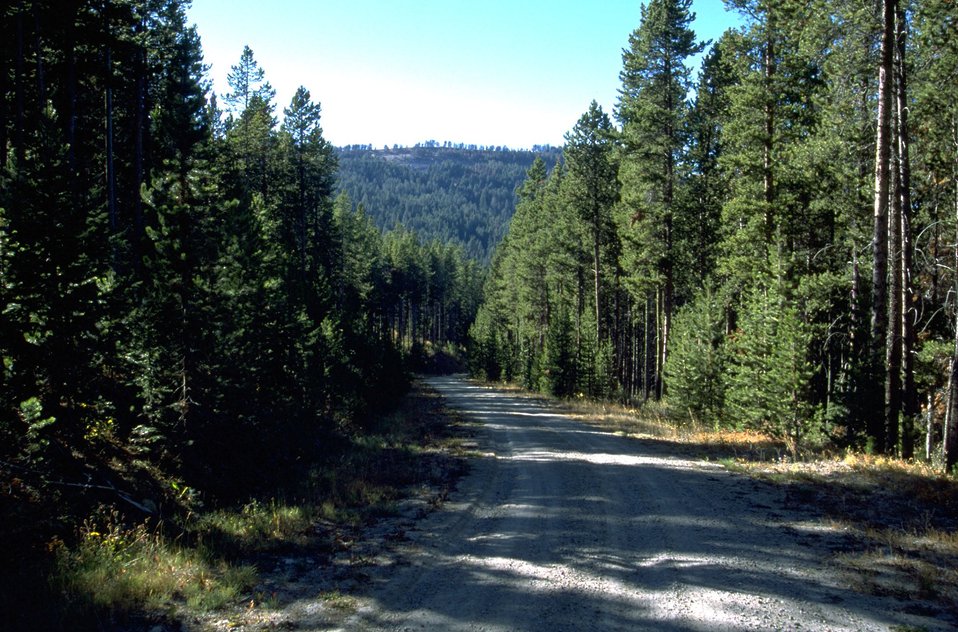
Price Peet road through forest setting